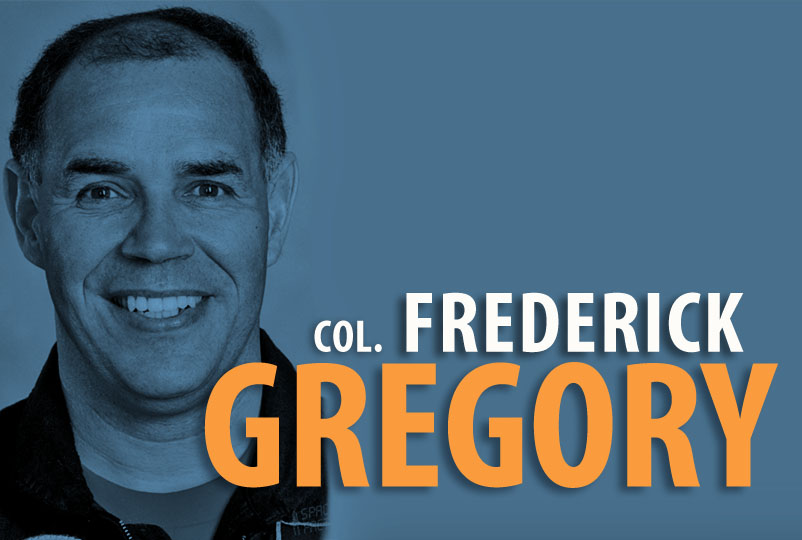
Col. Frederick Gregory